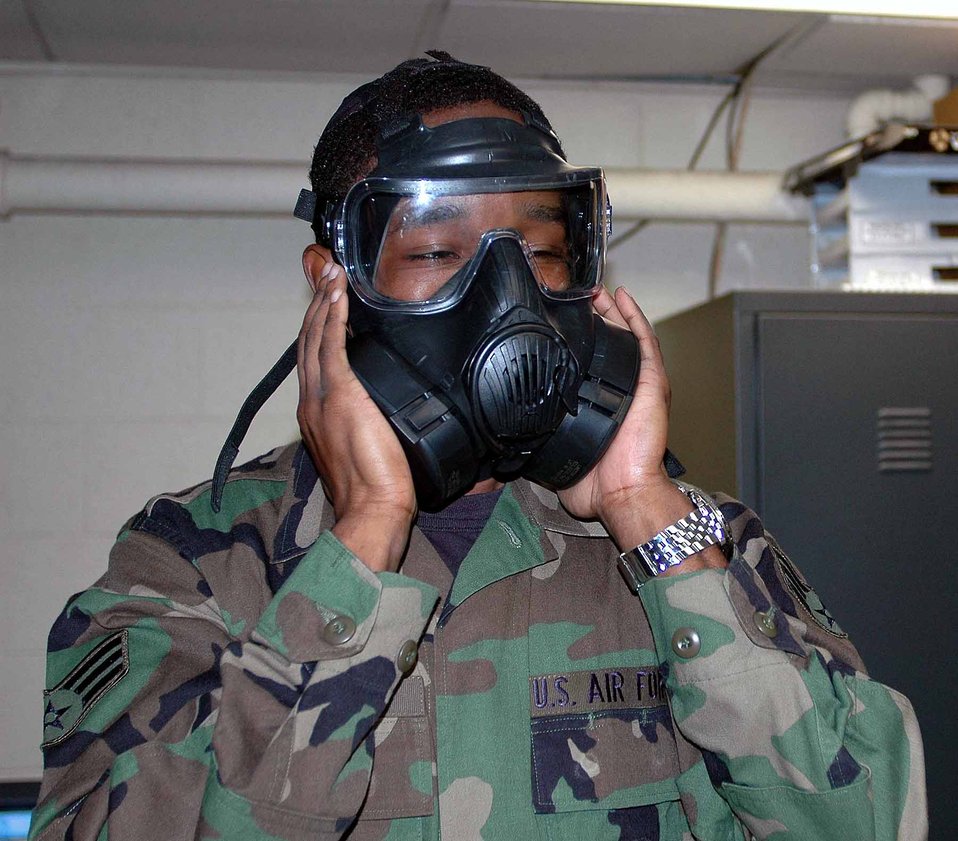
Osan gets technologicaly advanced protective masks

Senior Airman Marcus Easterling checks the seal on his new M-50 protective mask during a training class June 9 at Osan Air Base, South Korea. The new mask offers the same level of protection against chemical, biological and radiological threats as the MCU 2, but takes advantage of technological advancements such as a wider view, easier access to the drinking tube and an additional filter. Airman Easterling is with the 51st Dental Squadron.